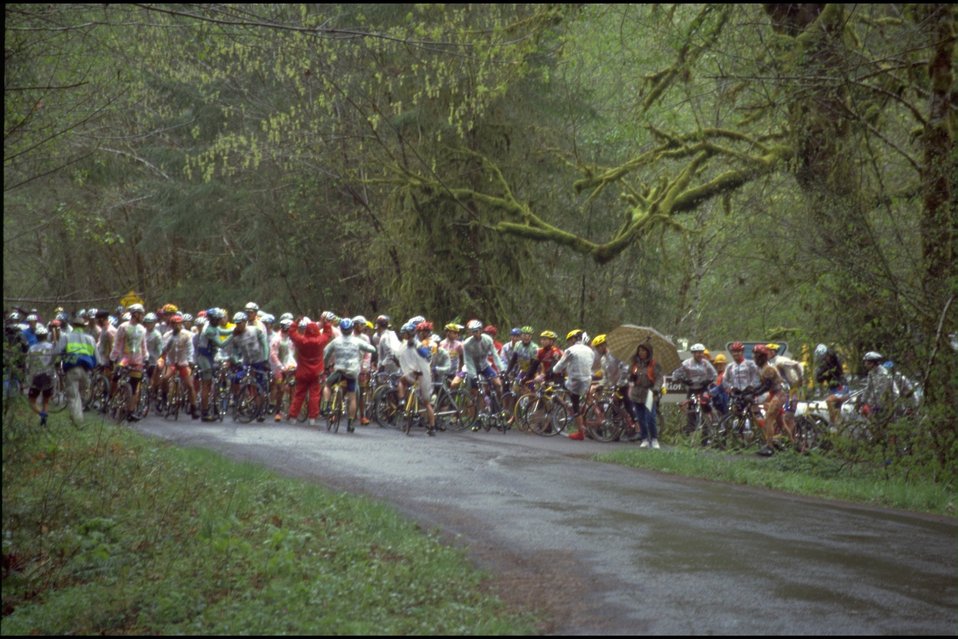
Tour of Willamette.